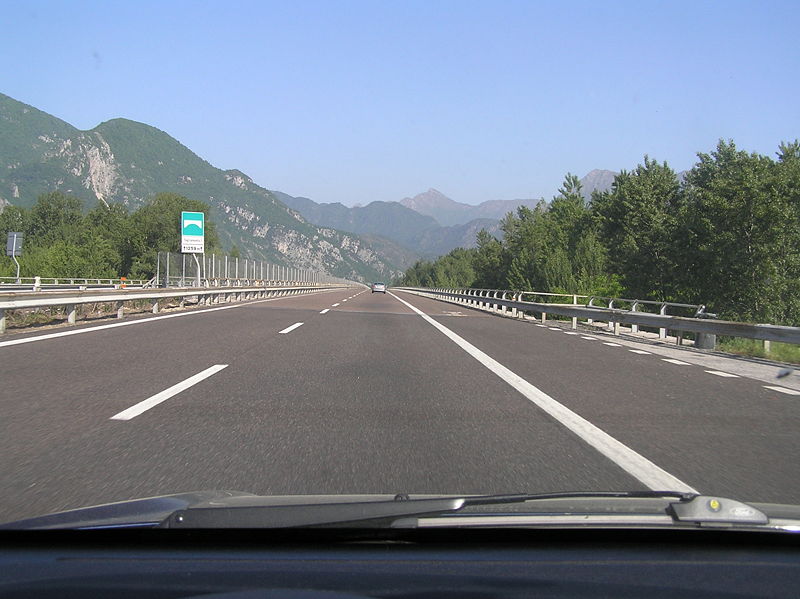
Italiano: Driving northbound approaching Tagliamento I bridge / Autostrada A23 - Corsia Nord, in prossimitá del ponte Tagliamento I